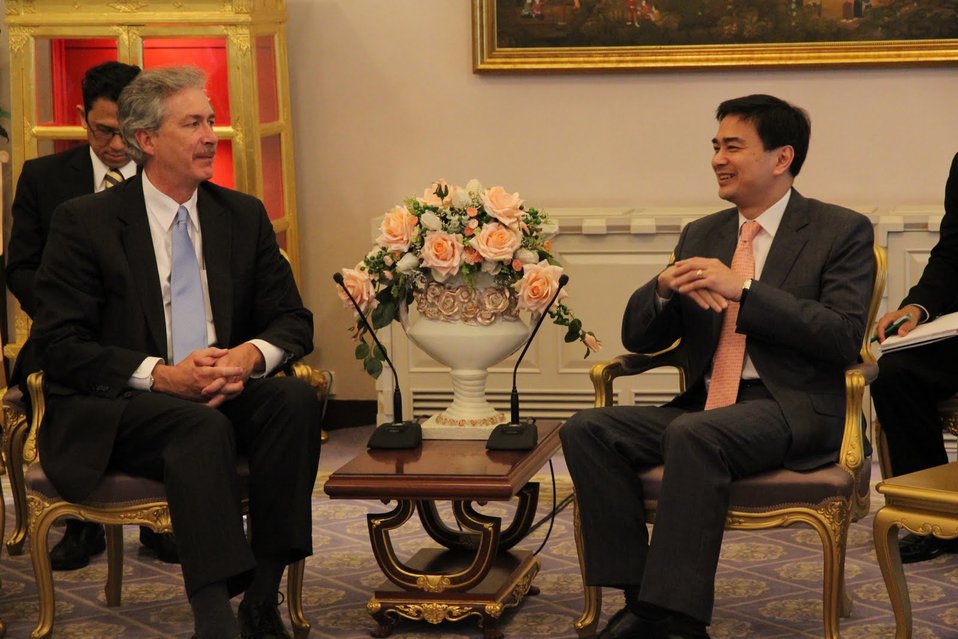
Under Secretary Burns and Thai Prime Minister Abhisit Vejjajiva Discuss U.S.-Thailand Relations

U.S. Under Secretary of State William J. Burns and Thai Prime Minister Abhisit Vejjajiva discuss U.S.-Thailand relations at the Thai Government House in Bangkok, Thailand, on June 16, 2010.